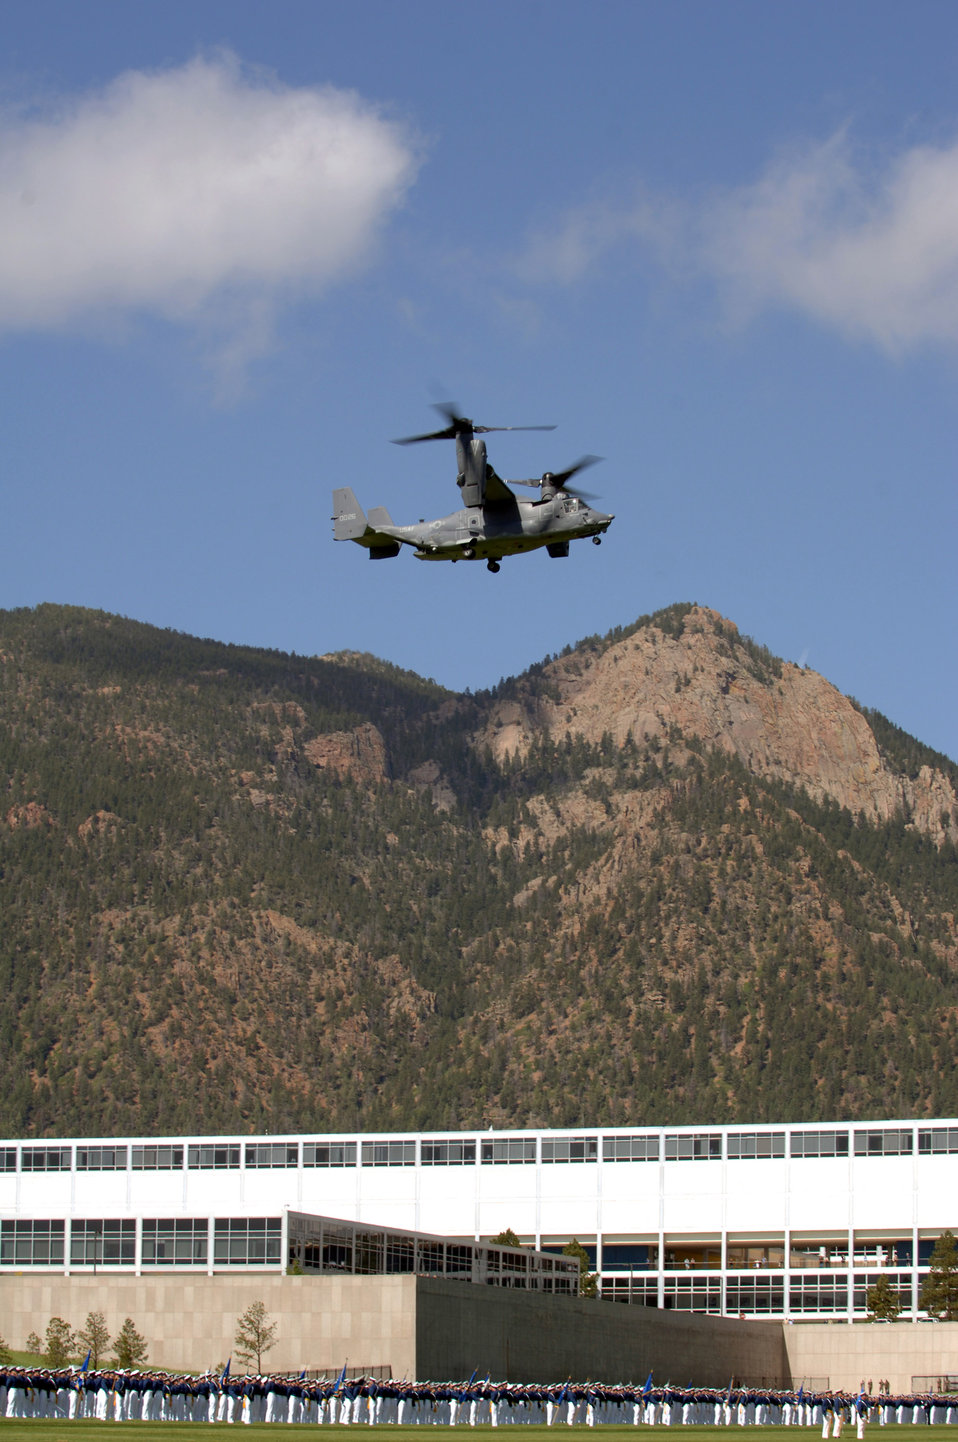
Parade preps Class of 2007 for graduation

A CV-22 Osprey flies over the 2007 Graduation Parade May 29 at the U.S. Air Force Academy in Colorado. The graduation for the U.S. Air Force Academy's Class of 2007 will be held at 10 a.m. May 30 at Falcon Stadium. Secretary of Defense Dr. Robert M. Gates will be the guest speaker. Each cadet graduates with a bachelor of science degree and a commission as a second lieutenant in the Air Force.